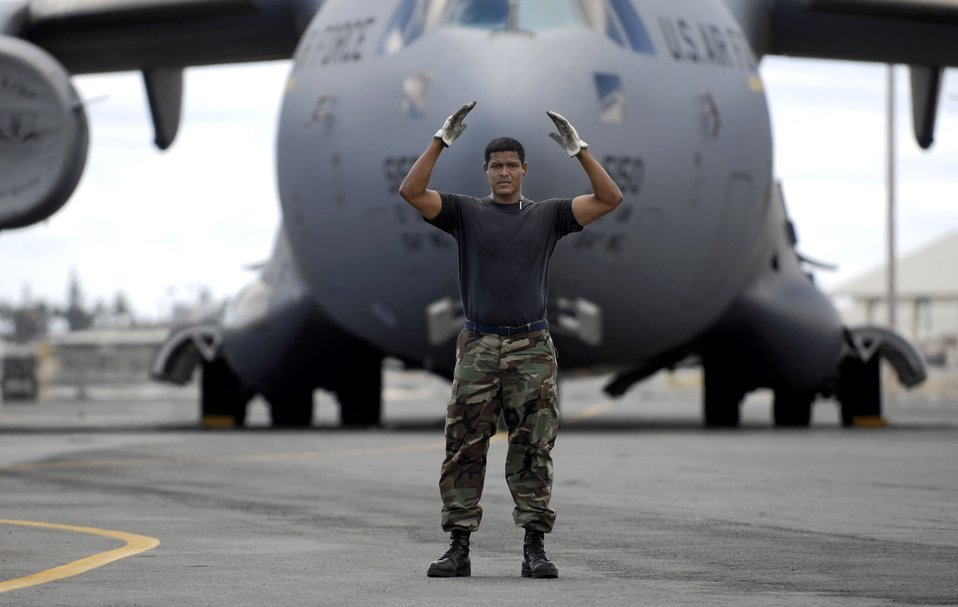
Hickam Rodeo team ready to go

Master Sgt. Greg Martinez guides a K-Loader off of a C-17 Globemaster III during a Rodeo practice July 13 at Hickam Air Force Base, Hawaii. The team is practicing for the upcoming Air Mobility Command Rodeo at McChord AFB, Wash. Sergeant Martinez is from the 15th Logistics Readiness Squadron, Combat Mobility Element and is part of Hickam's Rodeo team.